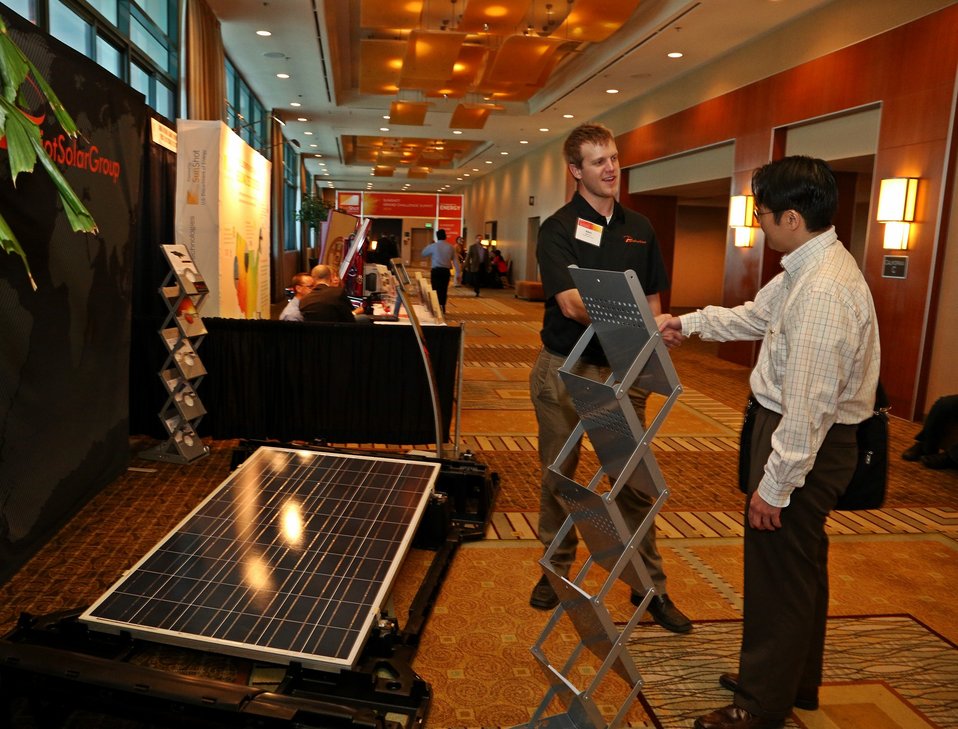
Tech Forum 21

Attendees and awardees discussing at booths outside the Tech Forum.